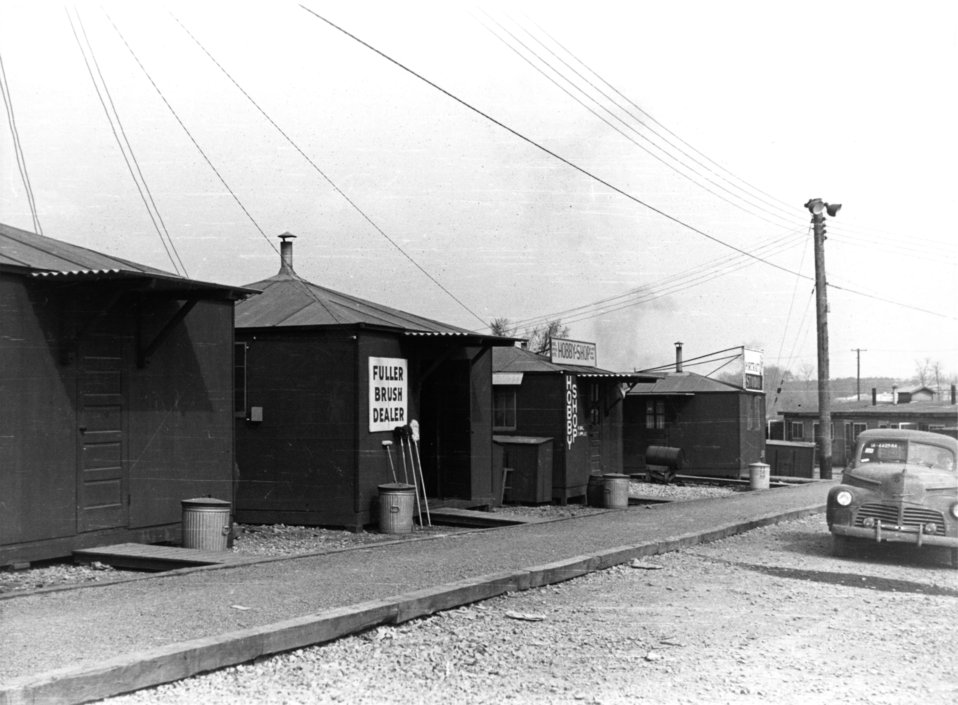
Business activity at Oak Ridge